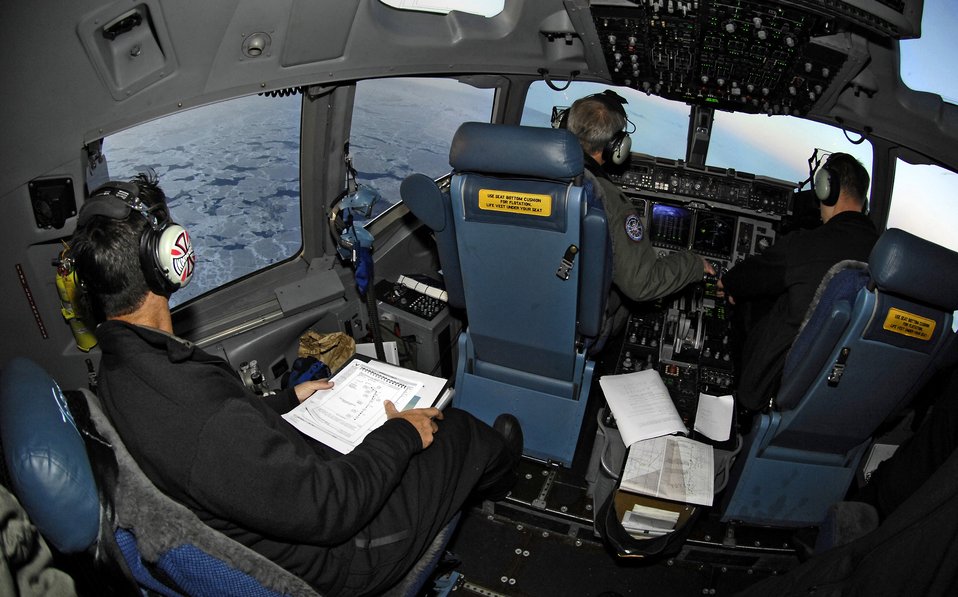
Off to the South Pole

Pilots fly a C-17 Globemaster III during a winter fly-in mission for Operation Deep Freeze to Antarctica Aug. 20. A C-17 and 31 Airmen from McChord Air Force Base, Wash., are flying in an augmentation of scientists, support staff, food and equipment for the U.S. Antarctic Program at McMurdo Station.